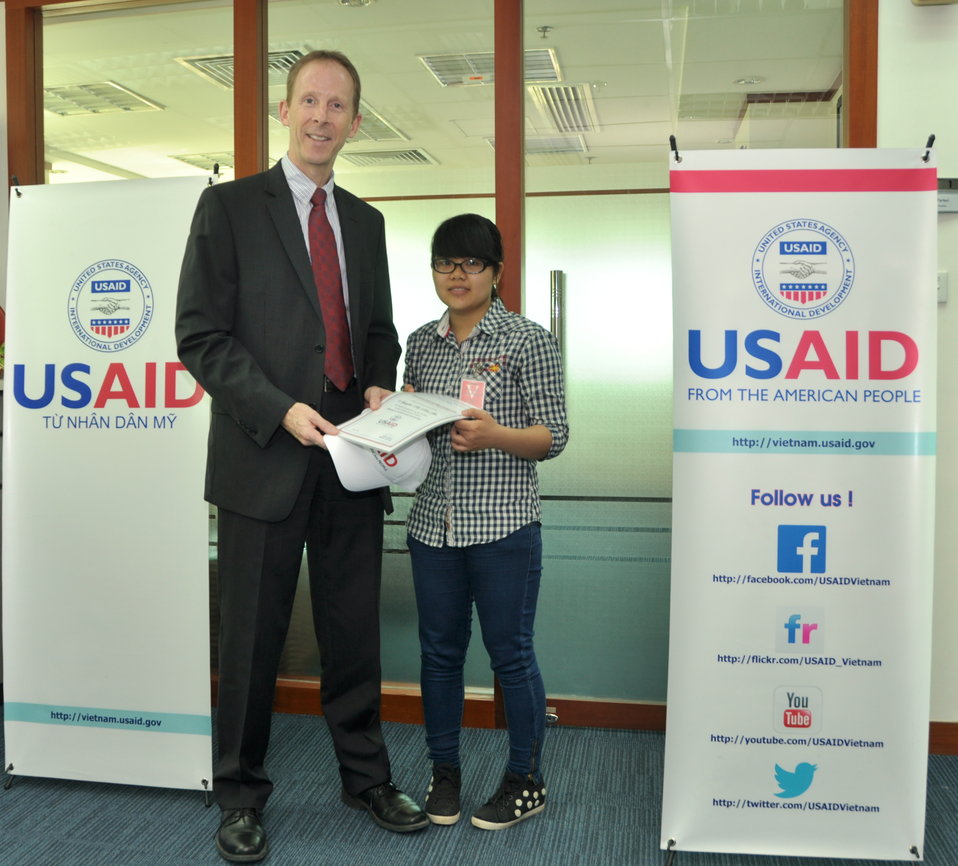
Women in Science and Technology Essay Contest Award Ceremony

USAID Mission Director Joakim Parker awards a certificate of recognition to Ms. Nguyen Thi Hai Yen, a student from Hanoi Foreign Trade University, who is among top 10 finalists in the USAID Women in Science and Technology Essay contest, on May 16, 2013.